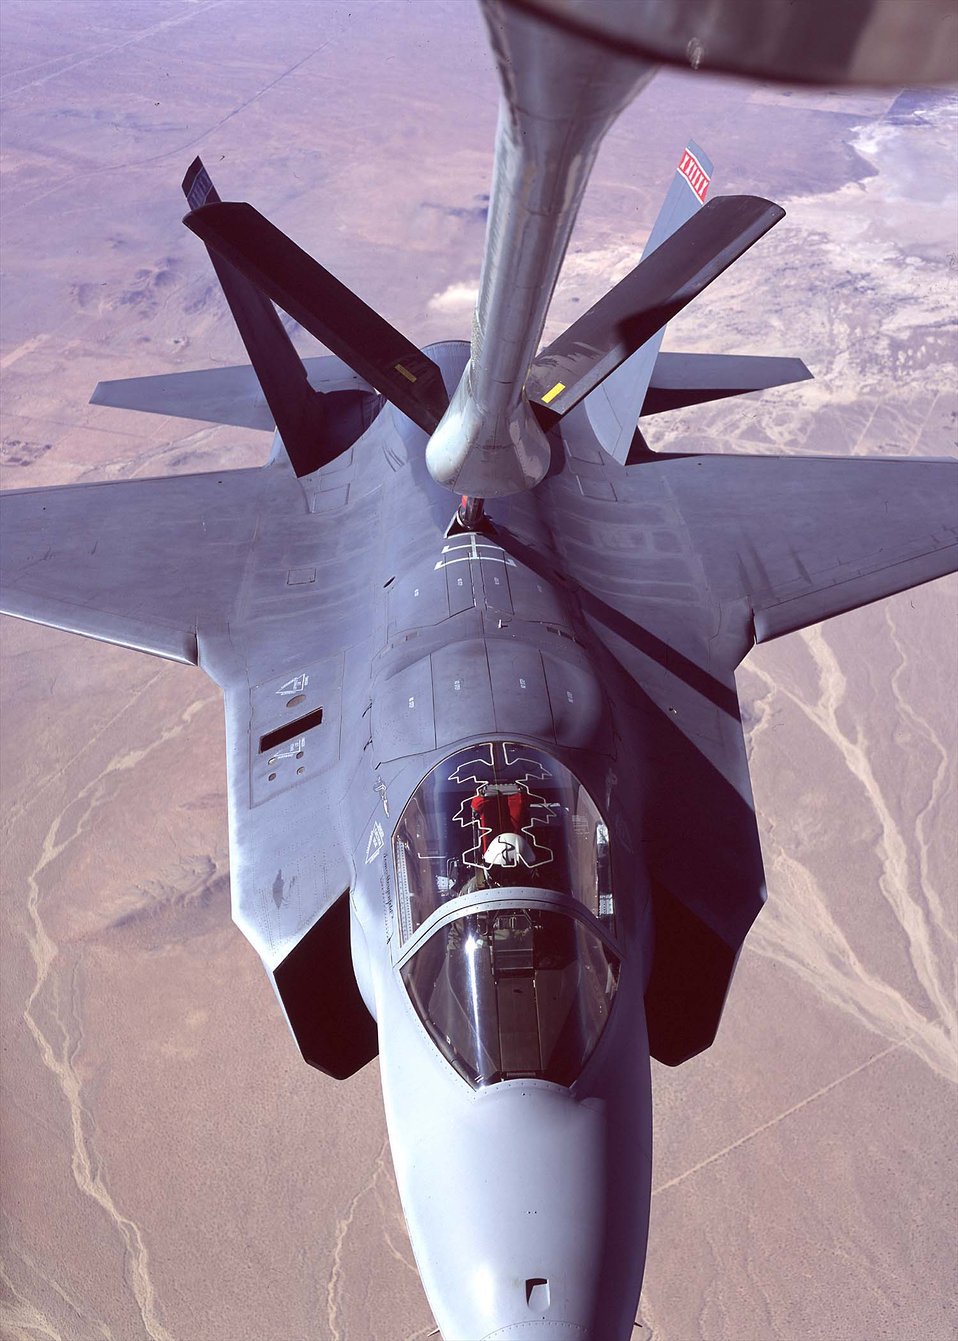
X-35A Joint Strike Fighter

EDWARDS AIR FORCE BASE, Calif. -- Lt. Col. Paul Smith holds the X-35A Joint Strike Fighter steady in behind a 418th Flight Test Squadron KC-135 tanker during the X-35A's first refueling mission.